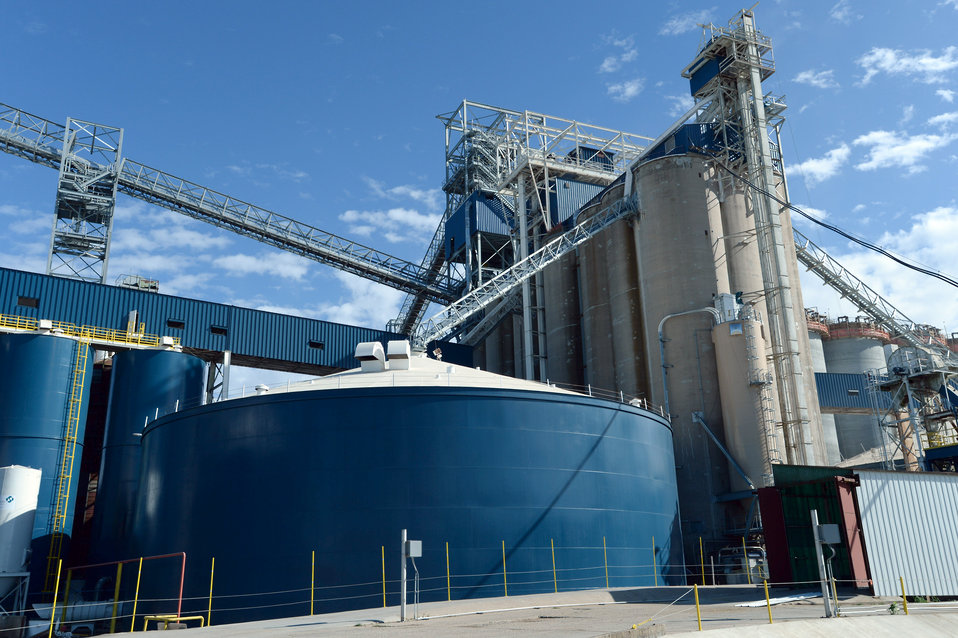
Grain is transferred from barges to holding tanks and tested in preparation for export near the port of New Orleans, LA on Tuesday, Nov. 19, 2013.